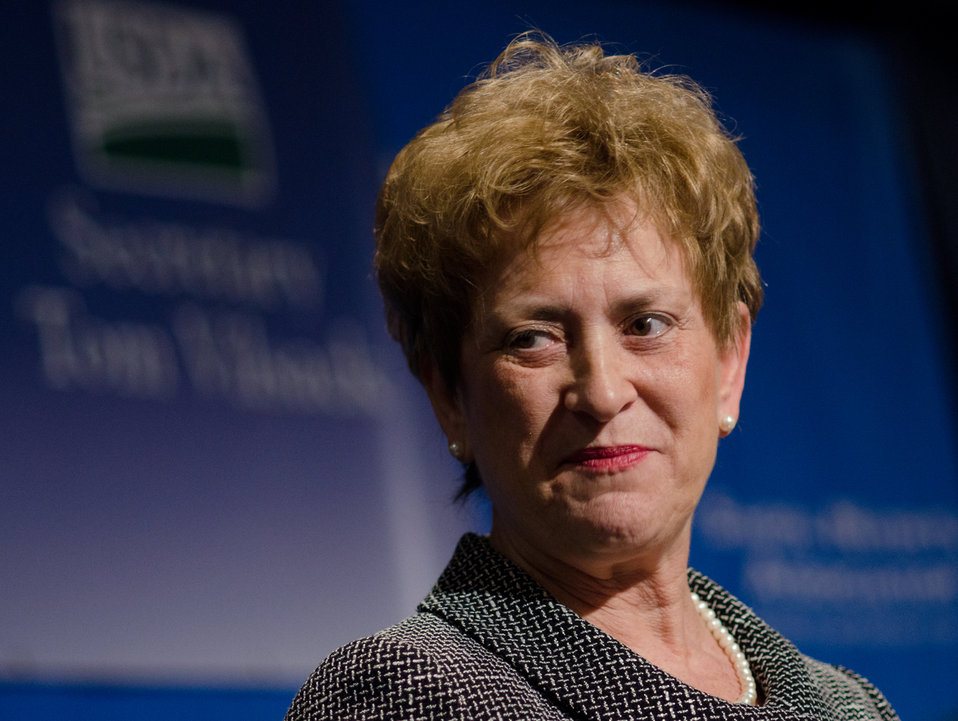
Agriculture Deputy Under Secretary for Food, Nutrition and Consumer Services Dr. Janey Thornton responded to questions during the School Nutrition Association’s closing general session of their 39th annual Legislative Action Conference at the J.W. Marriott Hotel in Washington, D.C., on Wednesday, March 9, 2011.